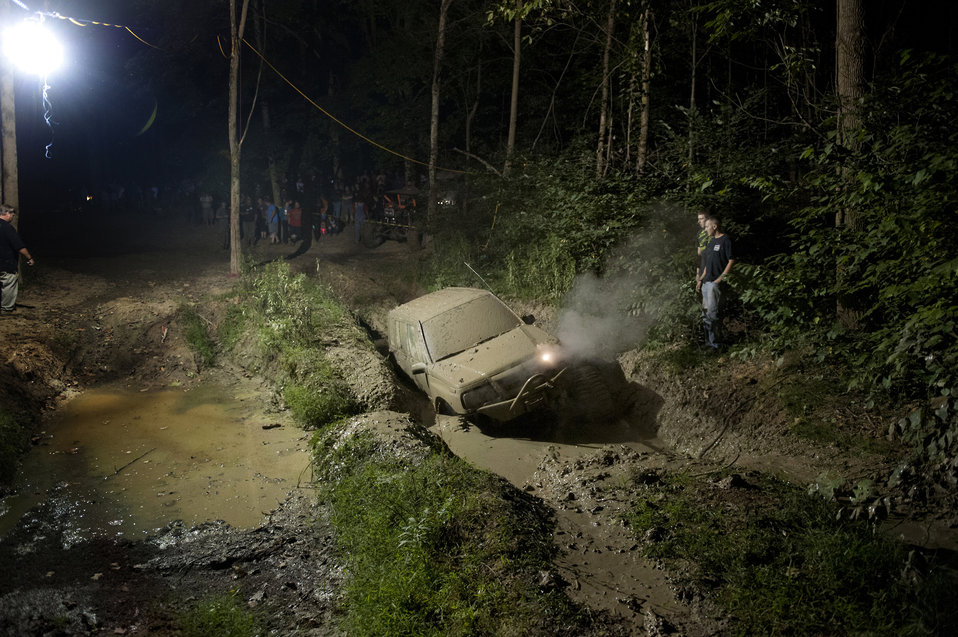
Wounded Warrior Care

A vehicle gets stuck in a mud pit during a mud bugging competition of the Big Dog Off-Road event in Gore, Va., Sept. 15, 2012.